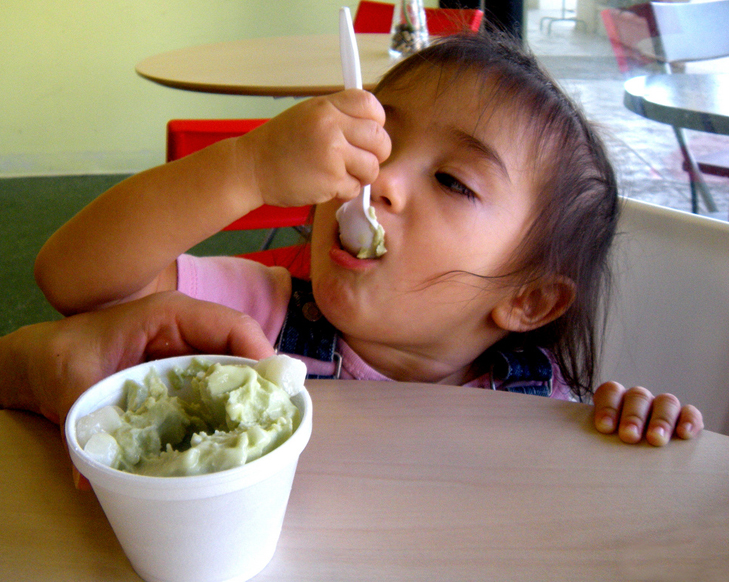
Eating-Frozen-Yogur

A young child eats frozen yogurt as a treat on a warm summer day. It is a great way to celebrate National Dairy Month in June and transition into National Ice Cream Month in July. National Dairy Month celebration actually began in 1937 as National Milk Month. It was a way to encourage Americans to include milk as part of their daily diet. A few years later, the event was renamed National Dairy Month, incorporating other dairy products into the celebration.